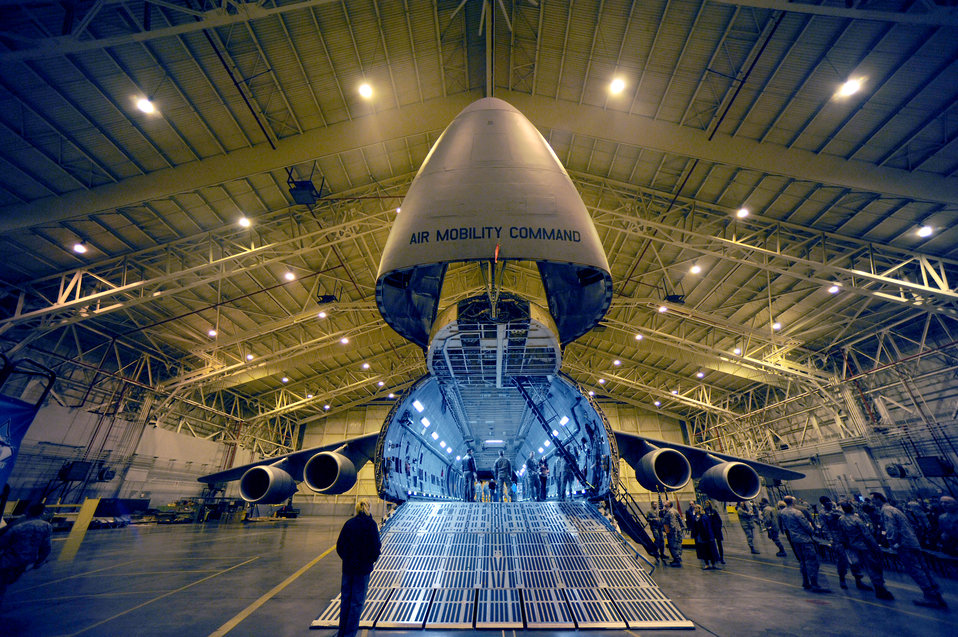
C-5M arrives at Dover

Members from the 105th Maintenance Squadron at Stewart Air National Guard Base, N.Y., tour and receive briefings on capabilities of this reconditioned C-5M Super Galaxy Nov. 5, 2010. A ceremony was held to mark the completion of reconditioning on the Super Galaxy prior to its delivery to Dover Air Force Base, Del.